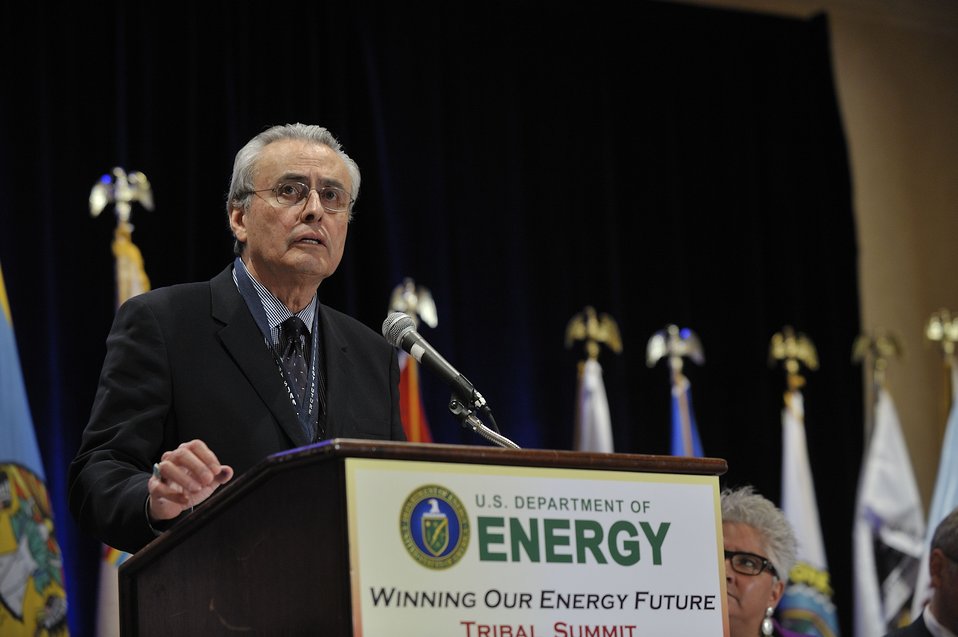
Tribal Energy Summit

HUD’s Roger Boyd addressing the Summit during the federal interagency panel